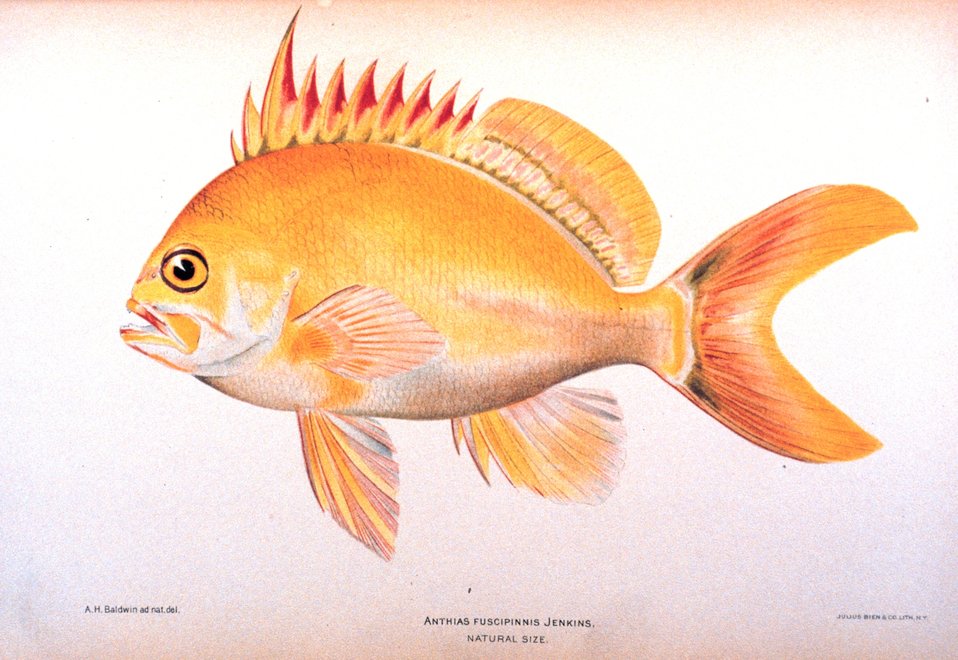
Anthias fuscipinnis Jenkins. In: 'The Shore Fishes of the Hawaiian Islands, with a General Account of the Fish Fauna', by David Starr Jordan and Barton Warren Evermann. Bulletin of the United States Fish Commission, Vol. XXIII, for 1903. Part I. P. 574, Plate XV.